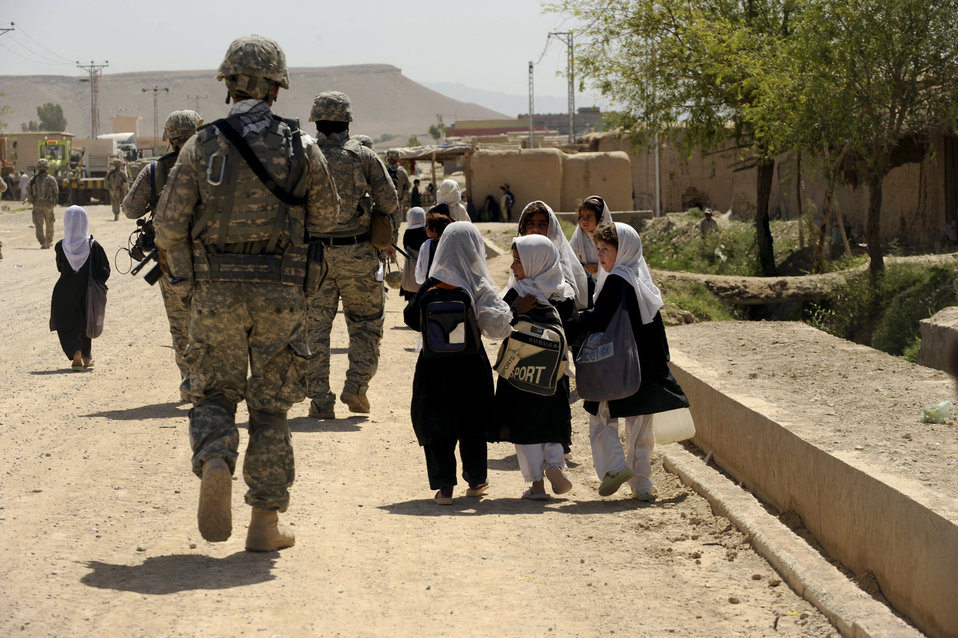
PRT beautifies Afghan girls school

Afghan students from the Bibi Khala Girls School walk home after a day of school alongside Soldiers and Airmen assigned to Provincial Reconstruction Team Zabul May 31, 2010, in Qalat City, Afghanistan.